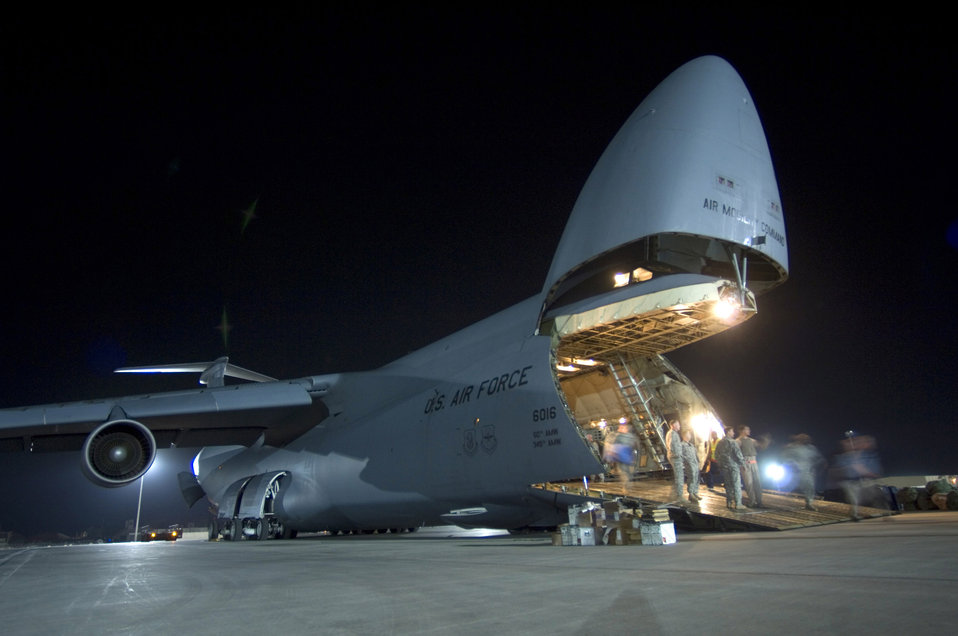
Open wide!

Airmen unload a C-5 Galaxy carrying troops, supplies and vehicles Aug. 3 at Joint Base Balad, Iraq. More than 950 cargo aircraft, 12,000 tons of cargo and 19,000 passengers are processed each month, making it the busiest aerial port operation in the Department of Defense. This C-5 is deployed from the 22nd Airlift Squadron at Travis Air Force Base, Calif.